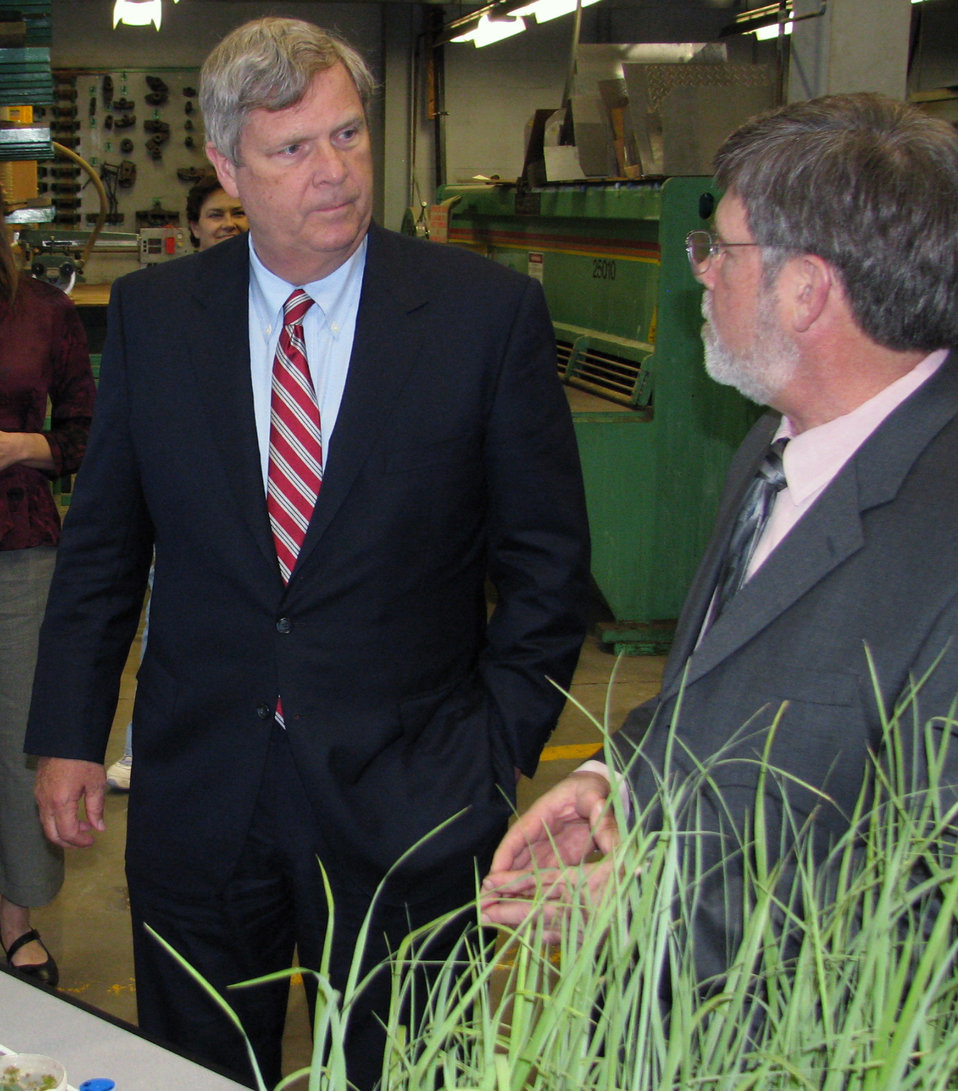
Agriculture Secretary Tom Vilsack listens to researchers discuss alfalfa at the U.S. Department of Agriculture's (USDA) Dairy Forage Research Center at the University of Wisconsin, Madison, WI, on Tuesday, May 7, 2013.